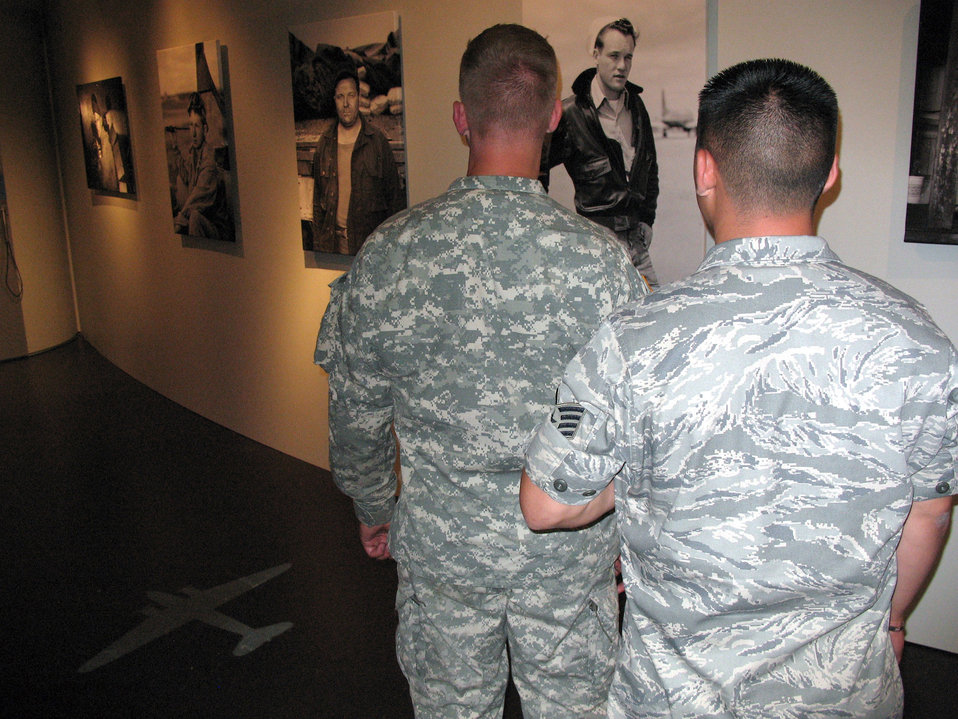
Veterans honor Berlin Airlift's 60th anniversary

An Airman and Soldier are the first to visit the Berlin Allied Museum's